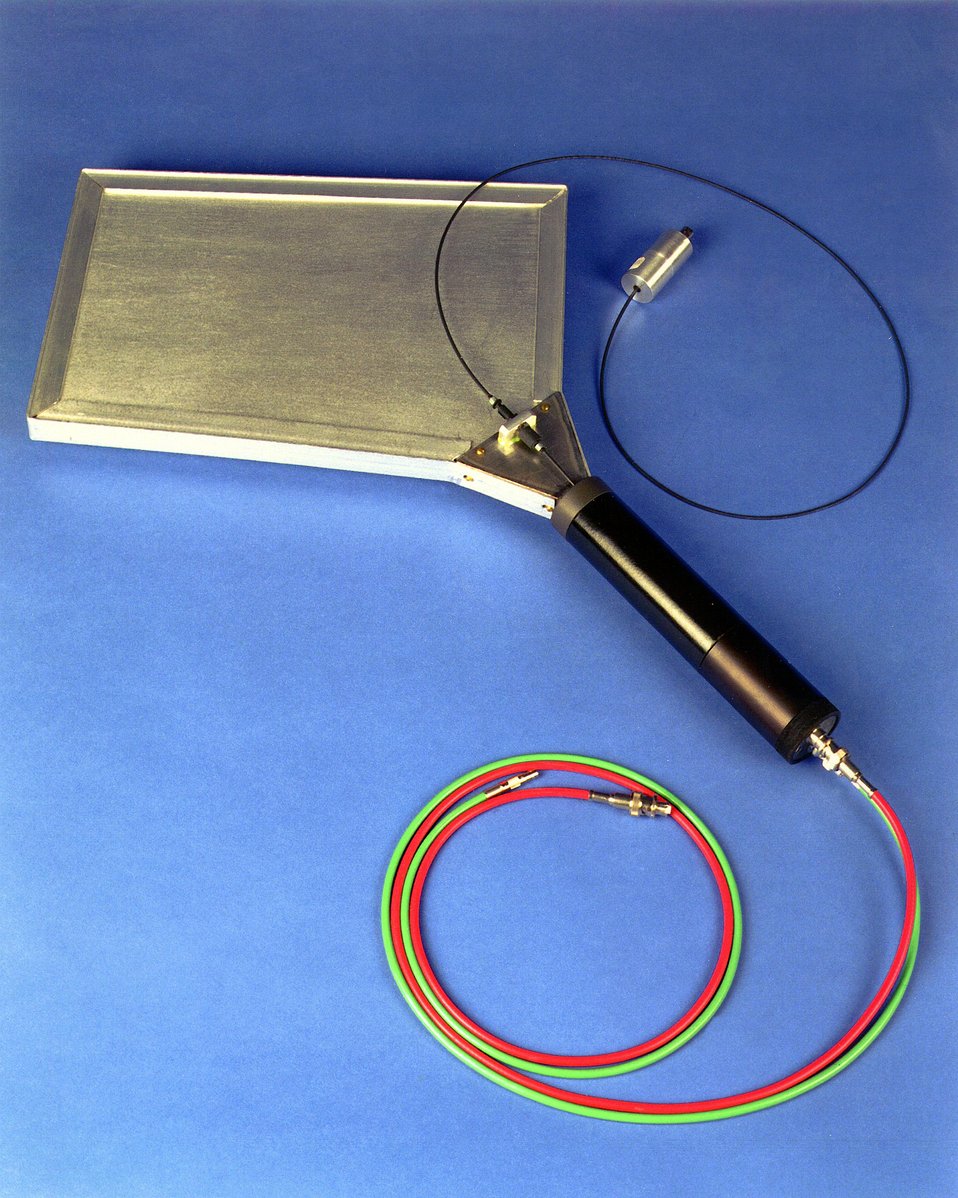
A MUON TRIGGER DETECTOR, ONE OF 4,608 USED IN THE DZERO FORWARD MUON SYSTEM PROJECT.

THE MUON SYSTEM OF TRIGGER DETECTORS TRACKS AND MEASURES THE BEHAVIOR OF MUONS IN A PARTICLE PHYSICS DETECTOR'S MAGNETIC FIELD. THE MUON, IS A SIGN OF AN UNUSUAL STATE OF MATTER PRODUCED IN THE PRIMARY PROTON-ANTIPROTON COLLISION INSIDE THE DZERO DETECTOR. IT IS AN IMPORTANT TAG USED BY PHYSICISTS IN TRACING DECAY PROCESSES BACK TO THEIR ORIGINS, WHICH COULD INCLUDE NEW DISCOVERIES BY THE COLLIDER RUN II OF THE TEVATRON.